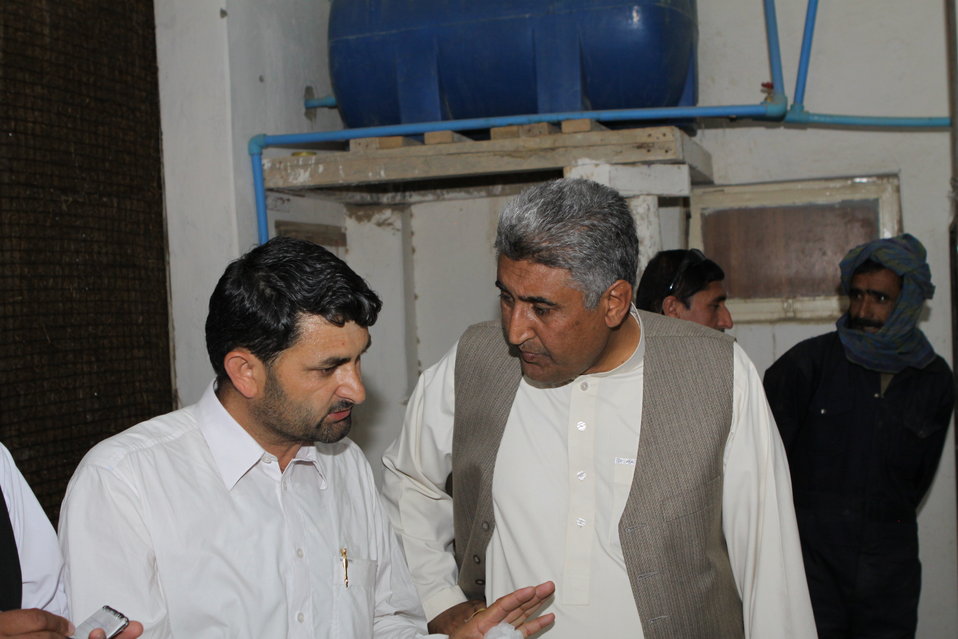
Bolan Poultry Farm